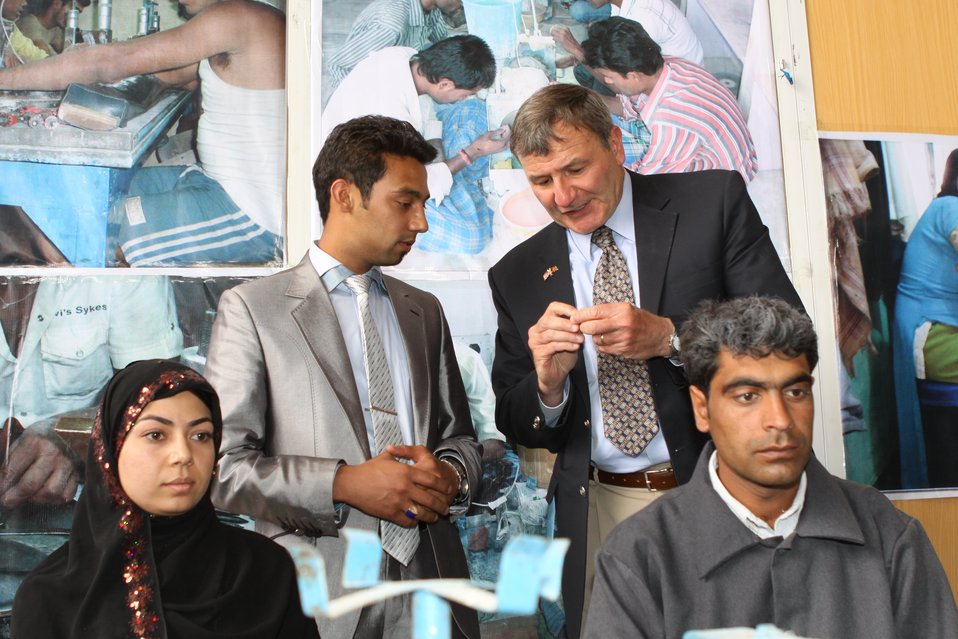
100525 Hirat Marble Conference 515